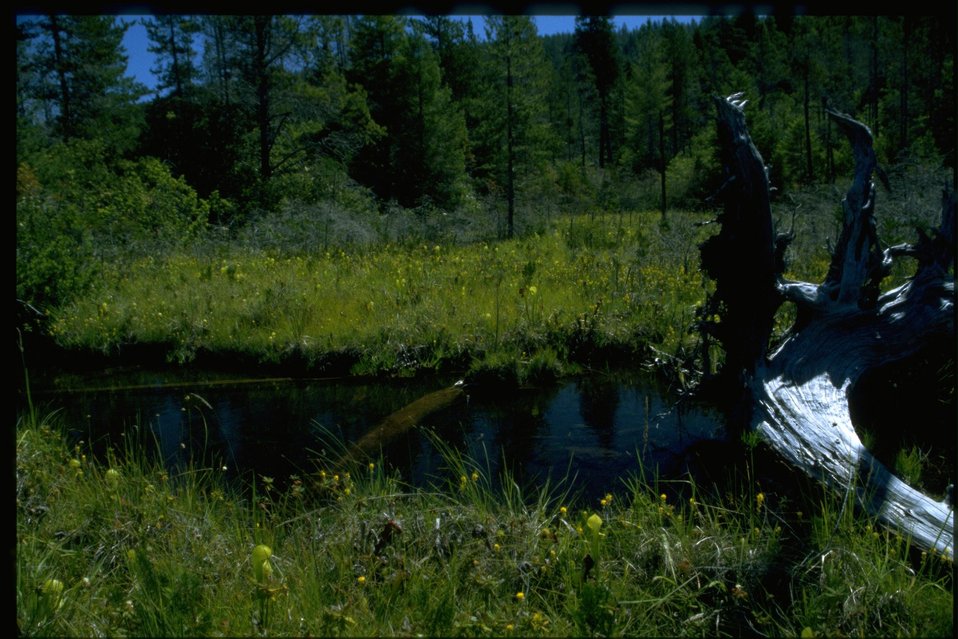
General view of Hunter Creek Bog, Northecium californicum, Darlingtonia californica (Cobra Lily).